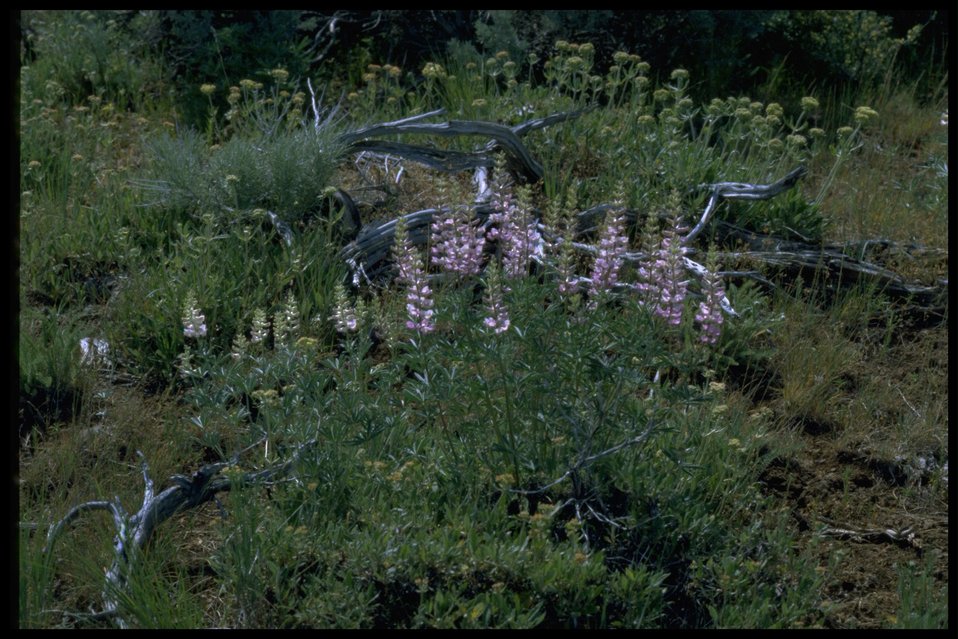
Farshot of Bigleaf Lupine wildflowers.